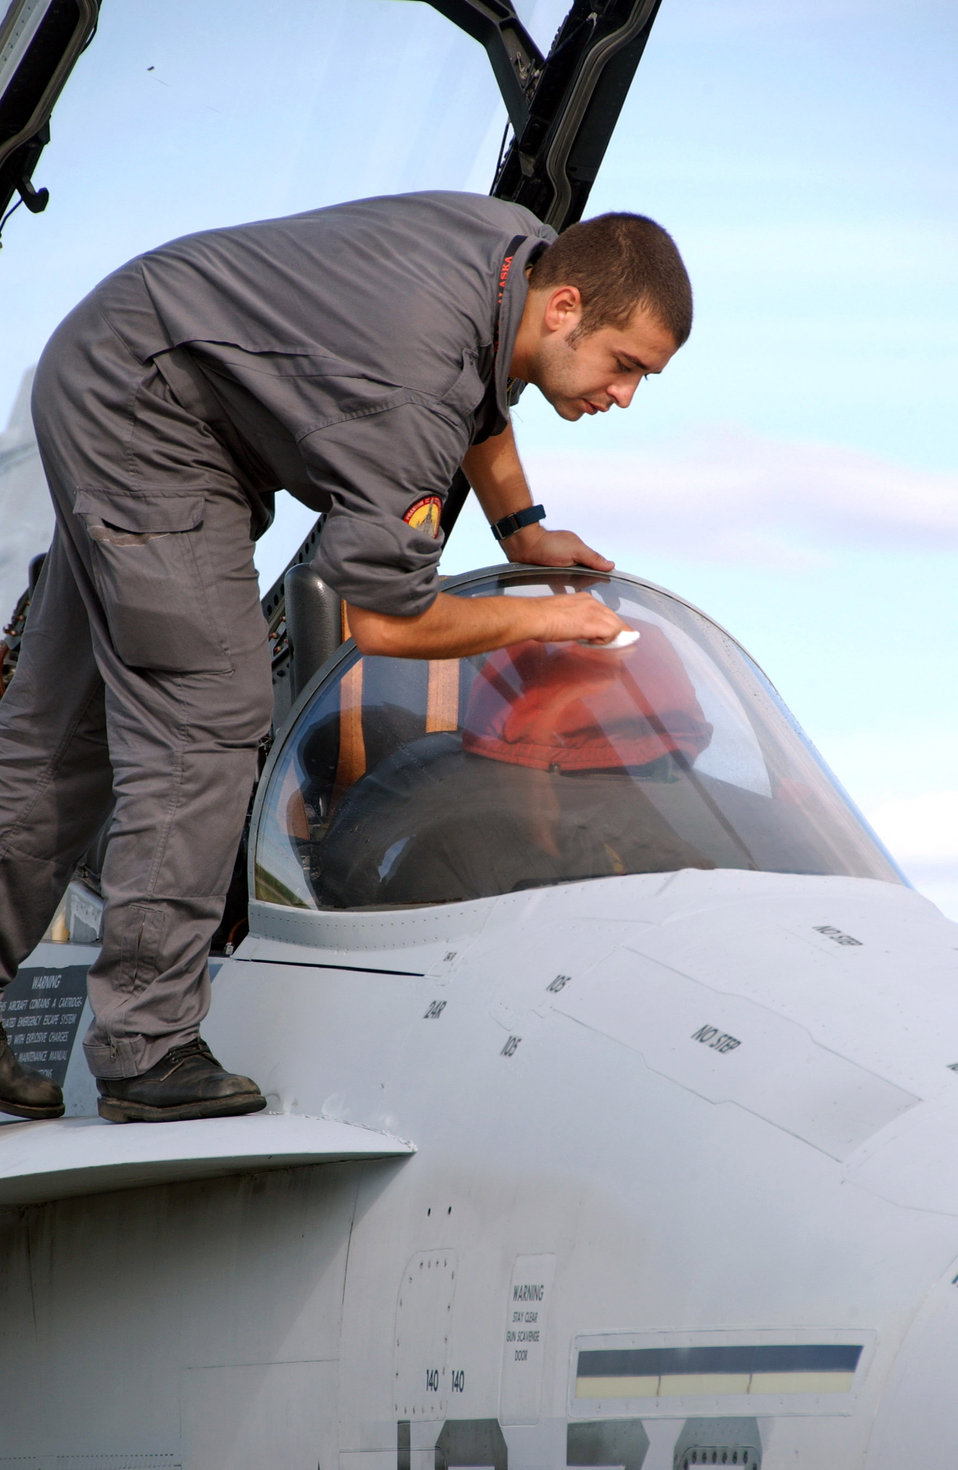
Red Flag-Alaska 07-3

Spanish Cpl. Javier Suarez cleans the canopy of an F-18 July 10 at Eielson Air Force Base, Alaska, prior to a training mission. Spain is one of a few countries that has airmen participating in Red Flag-Alaska 07-3. Red Flag-Alaska is a multi-service, multi-platform coordinated, combat operations exercise, which runs through the July 27. Corporal Suarez is assigned to the 12th Fighter Wing at Torrejon Air Base, Spain.